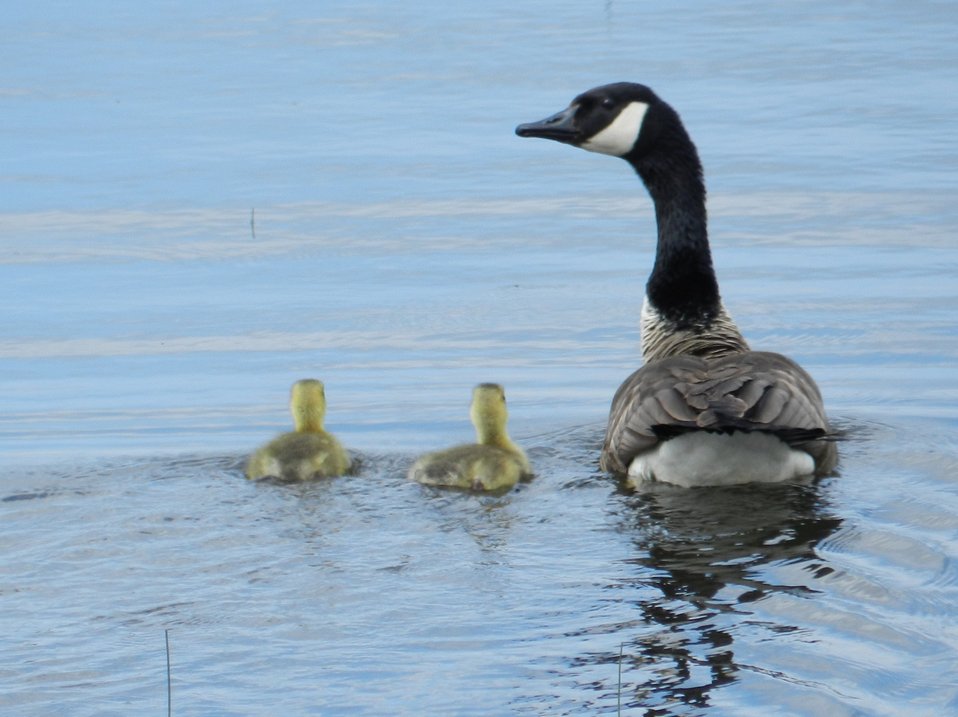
Keep Close

A Canada goose leads its young away from danger.